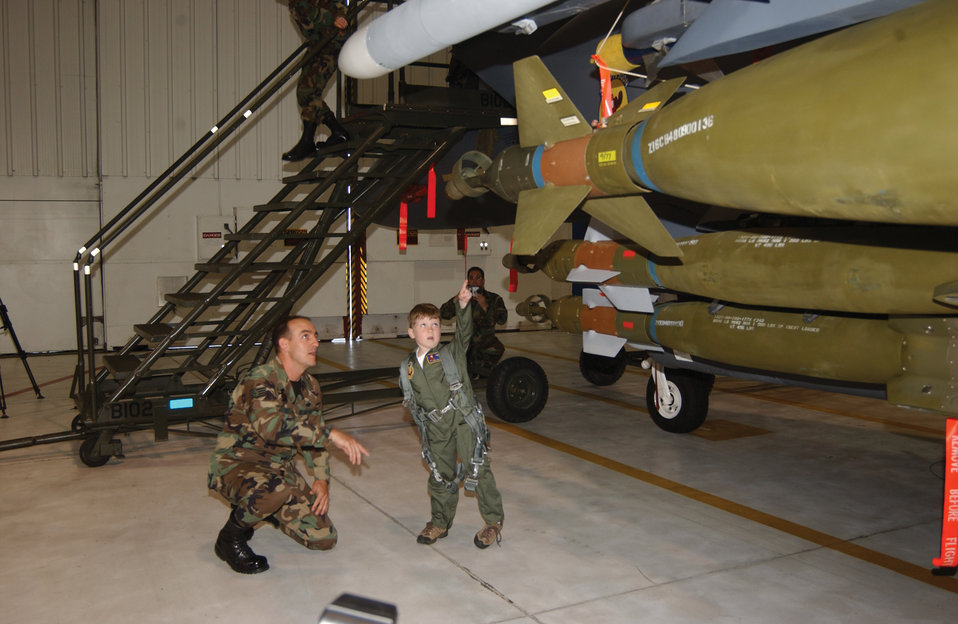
5-year-old cancer survivor plays pilot for a day

SEYMOUR JOHNSON AIR FORCE BASE, N.C. -- During a stop on his daylong tour April 15, Evan Moriarty looks at an F-15E Strike Eagle with Staff Sgt. Richard Pelletier of the 334th Aircraft Maintenance Unit here.